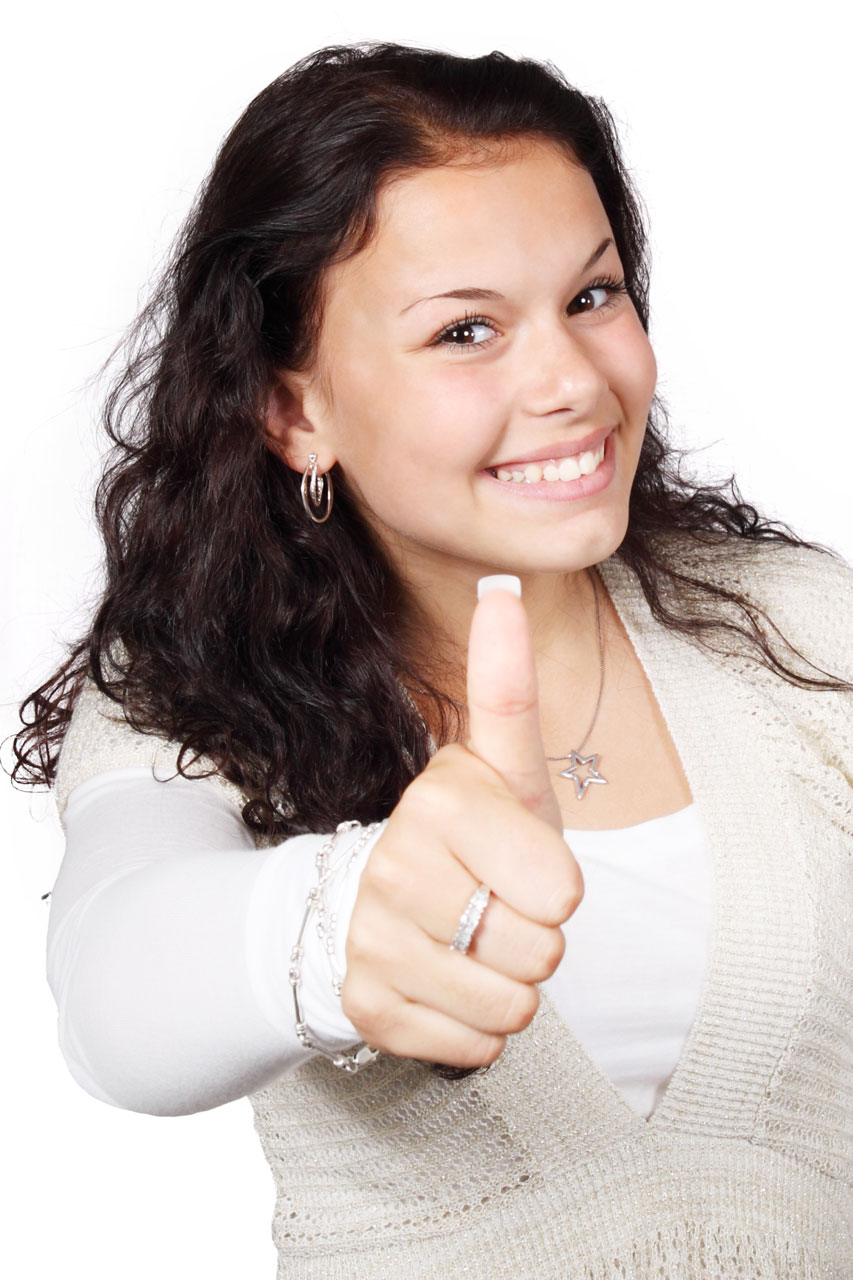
Thumbs up

Young woman gives thumbs up.